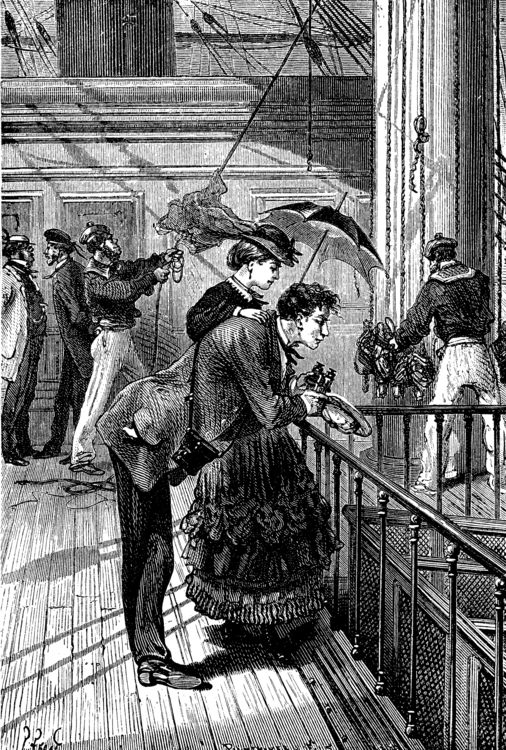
An illustration from Jules Verne's novel 'A Floating City' (1869) drawn by Jules Férat. Polski: Ilustracja powieści Juliusza Verne'a 'Pływające miasto' (1869) autorstwa Julesa Férata. Français : Jules Verne: 'Une Ville flottante' (1869), dessins par Jules Férat. Orginal text: Français : Je les vois souvent penchés sur l’écoutille.